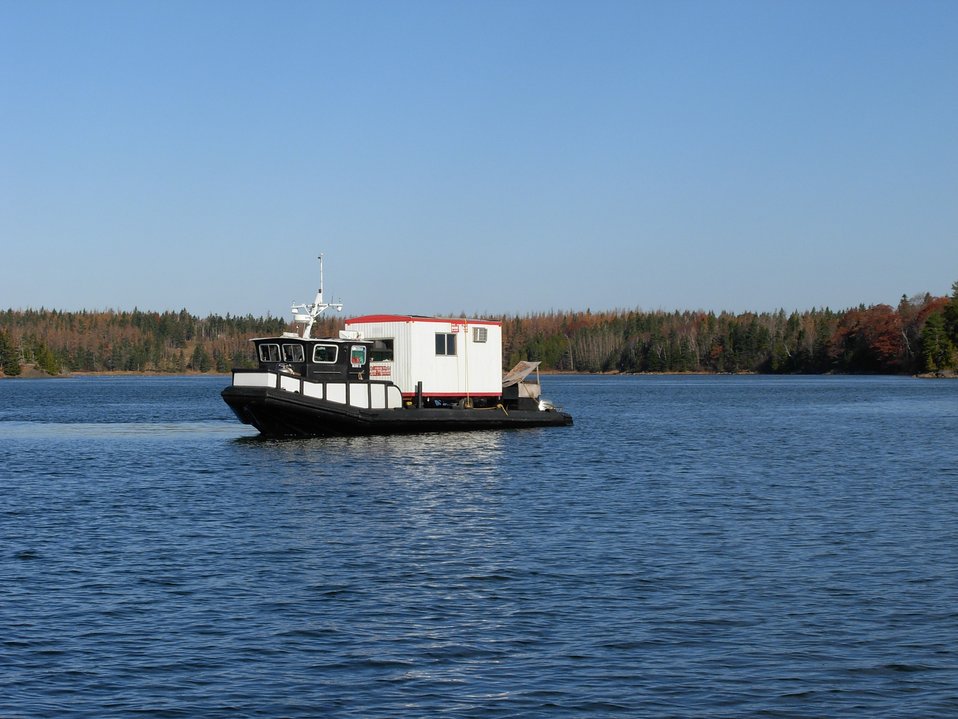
A Corps of Engineers survey vessel in the Passamaquoddy Bay area.